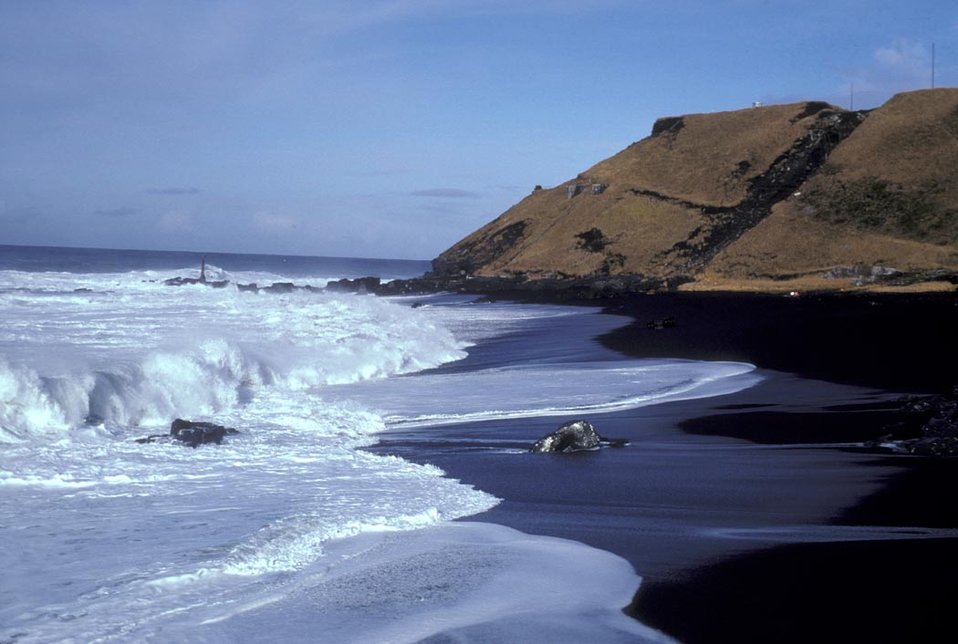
Unimak Island, Cape Sarichef, Alaska Maritime NWR

Waves pound the coast of Unimak Island in the Alaska Maritime National Wildlife Refuge. (USFWS)